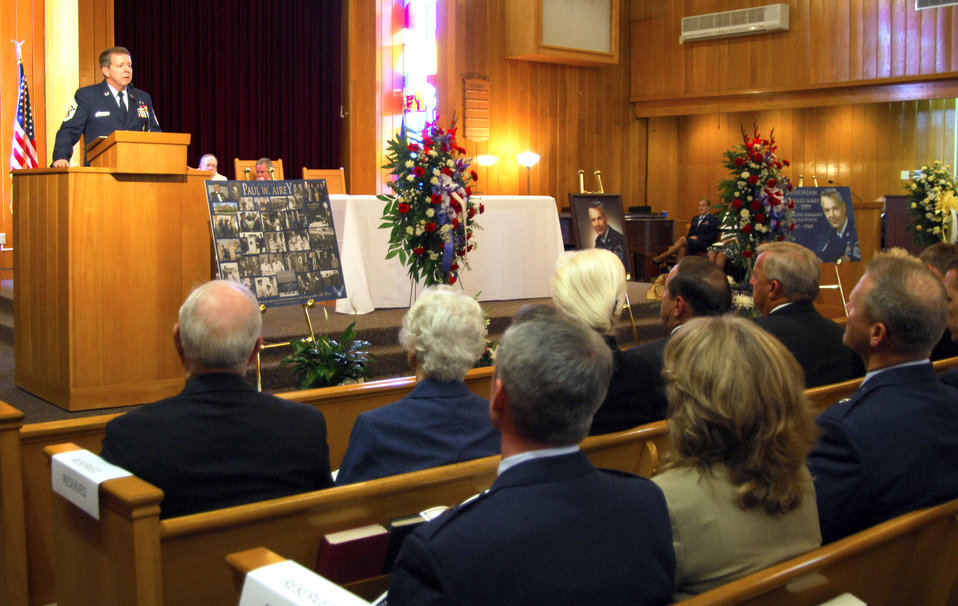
Airey memorial service celebrates life of AF hero

Chief Master Sgt. of the Air Force Rodney McKinley addresses those in attendance for the memorial service of the first Chief Master Sgt. of the Air Force, Paul W. Airey, at Tyndall Air Force Base, Fla., March 16. Chief McKinley spoke of Chief Airey's legacy and how that legacy affects the decisions he makes for today's Air Force.